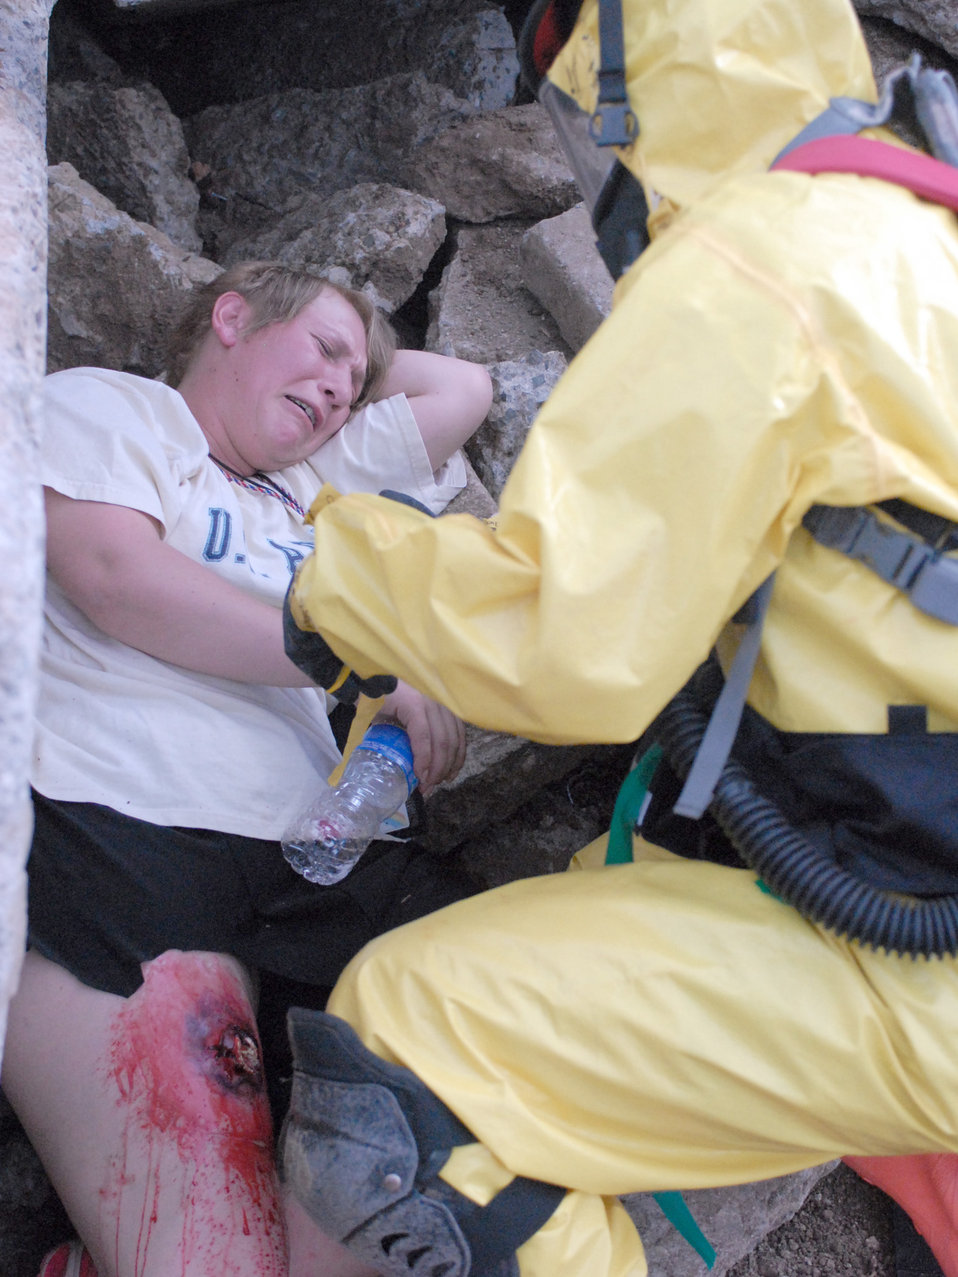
Hawaii National Guard all-hazards response team earns validation

Hawaii National Guardsmen assist